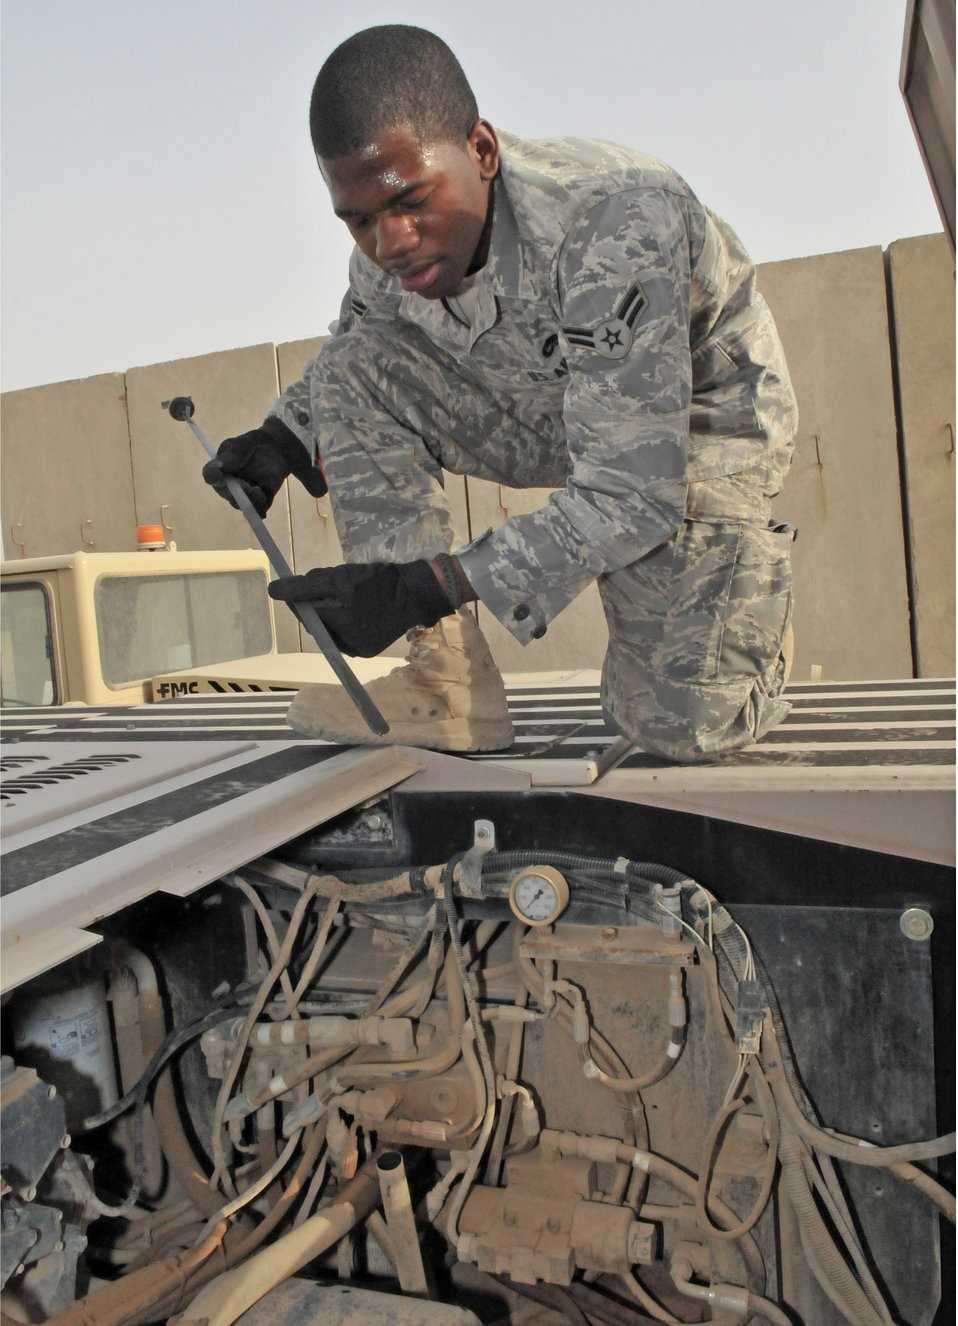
Balad Airmen

Airman 1st Class Christopher Atkins checks the oil level on a U30 aircraft tow vehicle July 12, 2010, at Joint Base Balad, Iraq. The U30 tow vehicle is used to maneuver aircraft for maintenance. Airman Atkins is a 521st Air Mobility Operations Group, Det. 5 aerospace propulsion specialist.